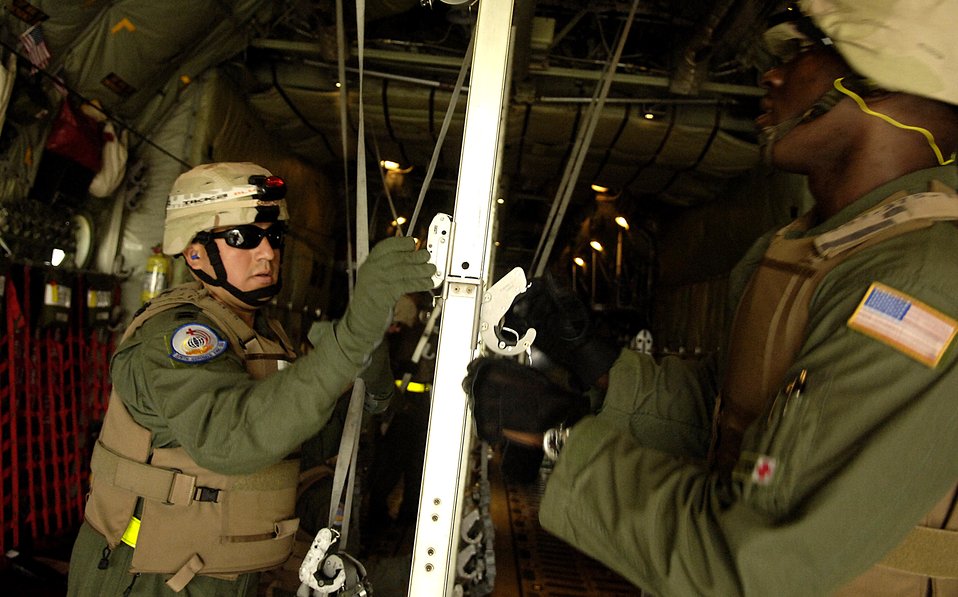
Aeromedical evacuation teams test lifesaving skills at Rodeo

Capt. John Camacho-Ayala and Tech. Sgt. Kermit McLauchin configure a C-130 Hercules during a aeromedical evacuation competition July 23 for Air Mobility Command's Rodeo 2007 at McChord Air Force Base, Wash. Captain Camacho-Ayala is a flight nurse and Sergeant McLauchin is a medical technician with the 375th Aeromedical Evacuation Squadron at Scott AFB, Ill.